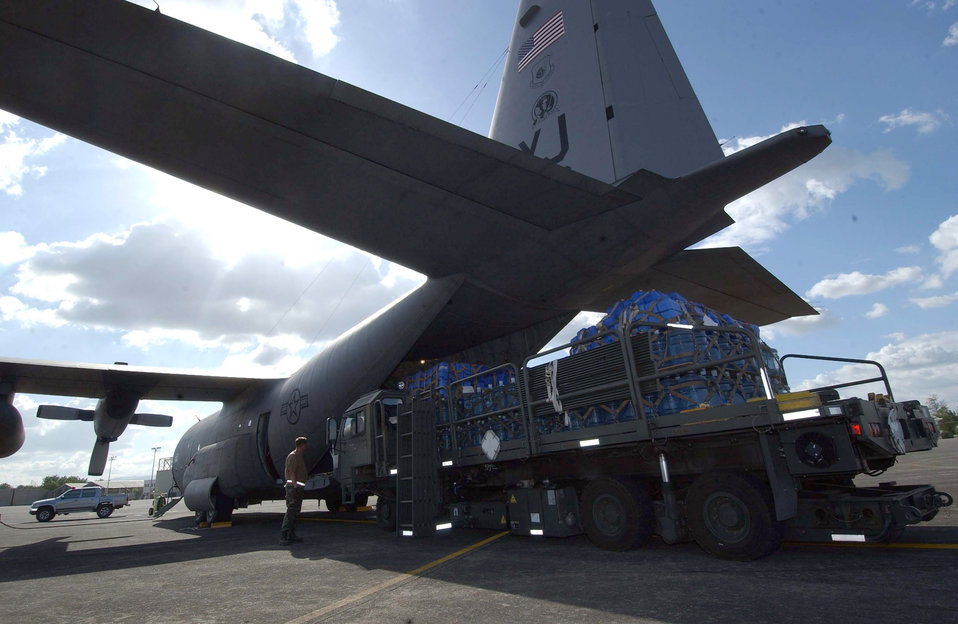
Philippine humanitarian relief

CLARK AIR BASE, Philippines (AFPN) -- U.S. servicemembers load a C-130 Hercules with relief supplies Feb. 20. The supplies will be brought to Tacloban, a city on the northwestern part of the island of Leyte, Philippines. U.S. and Philippine armed forces are working together to help the victims of the Feb. 17 landslide in the village of Guinsaugon on the island.